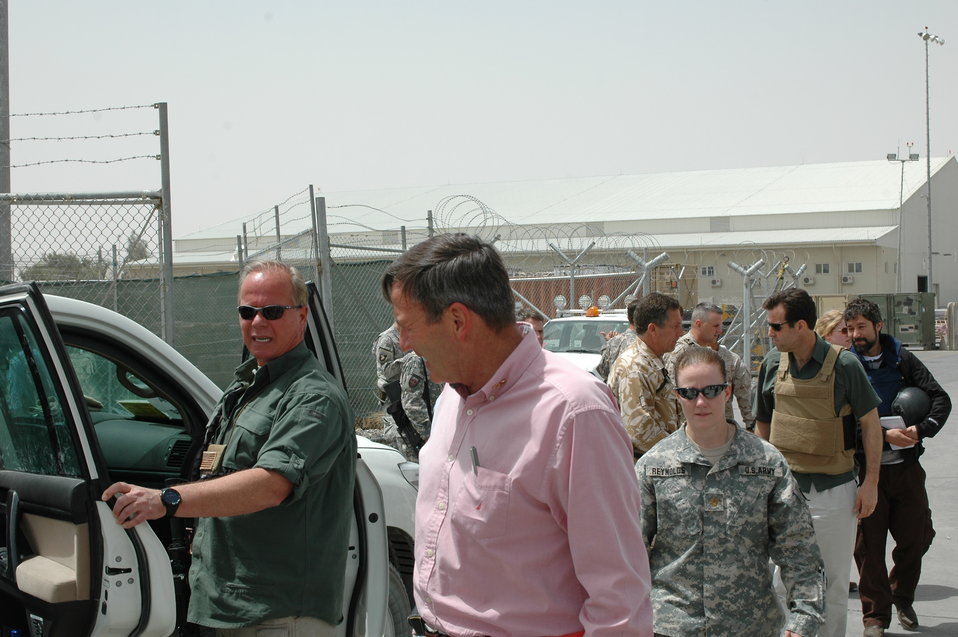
CODEL Berman